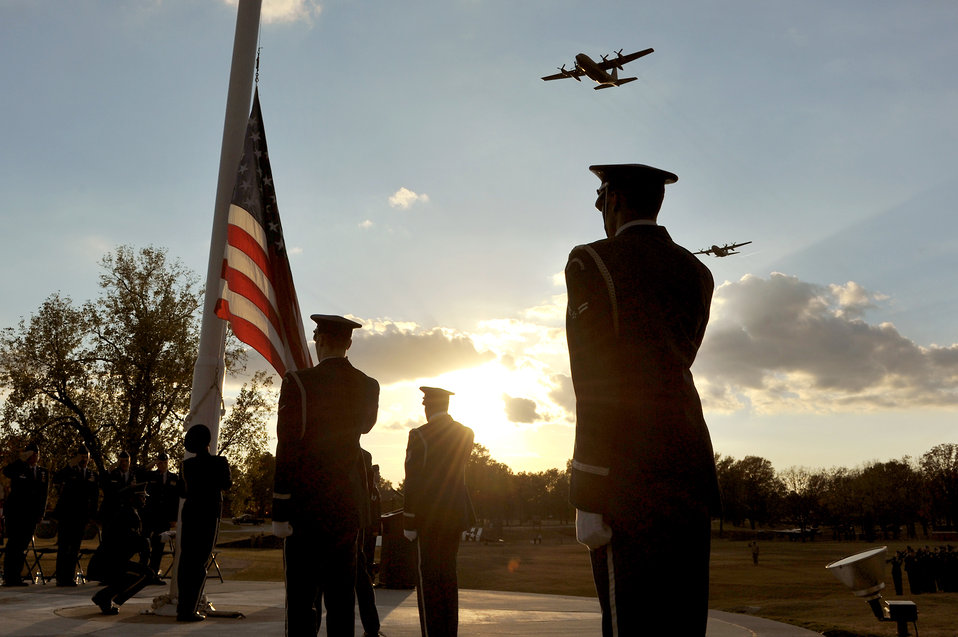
In their honor

Two C-130 Hercules fly over the Veterans Day retreat ceremony Nov. 10, 2010, at Little Rock Air Force Base, Ark.